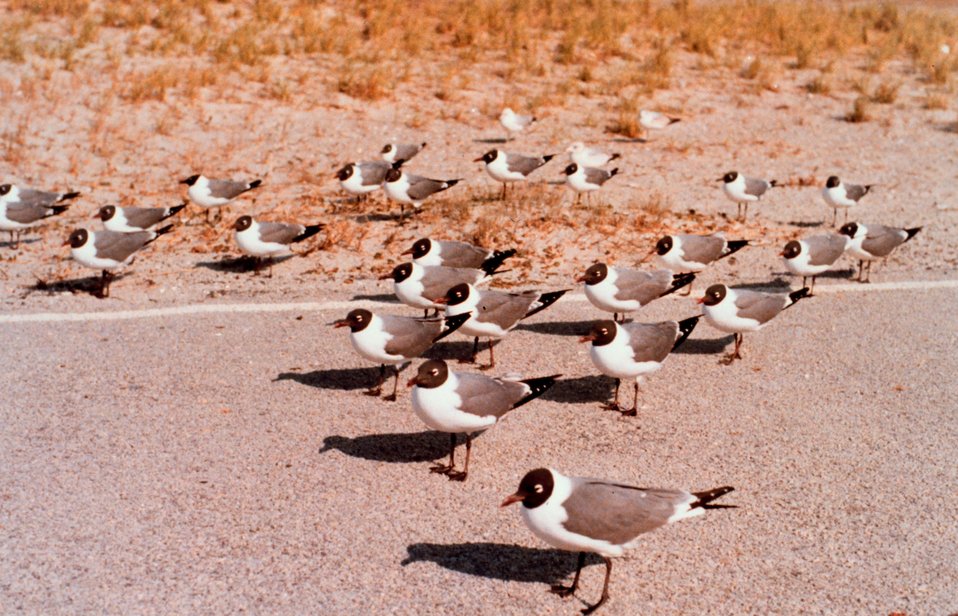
A flock of sea gulls taking it easy